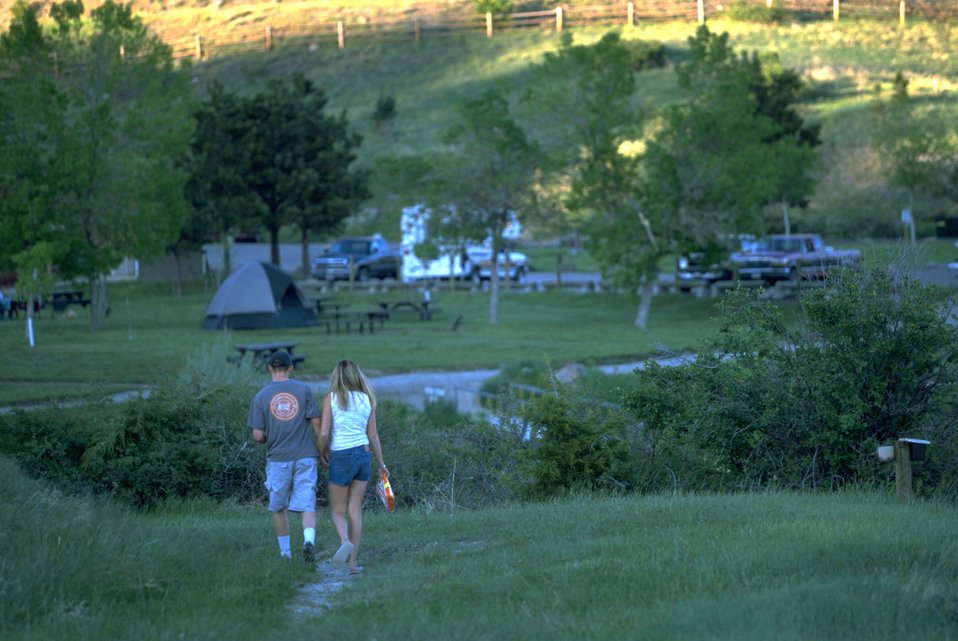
Couple walking in Holter Lake Campground